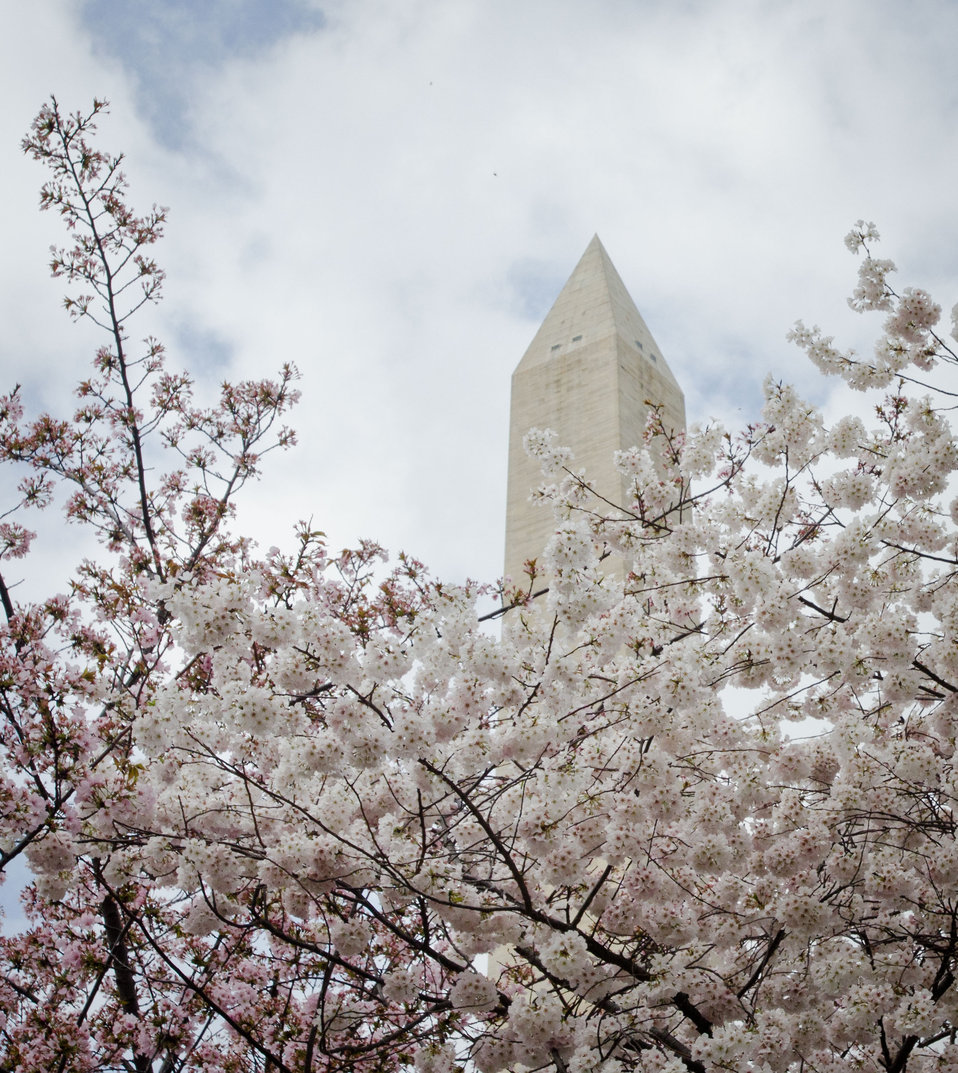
Washington Monument surrounded by Cherry blossoms in Washington, D.C., on Tuesday, March 20, 2012.